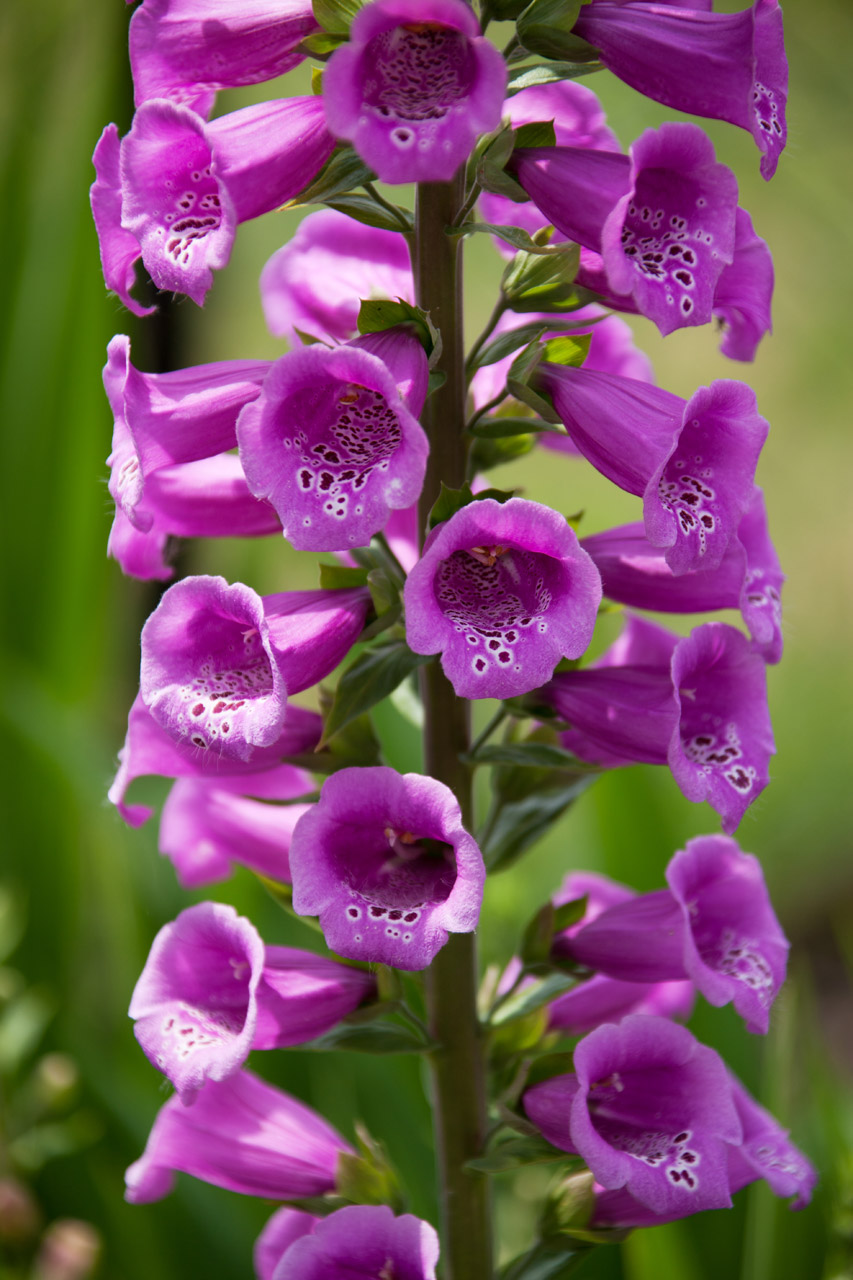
Digitalis purpurea

Common foxglove flower.